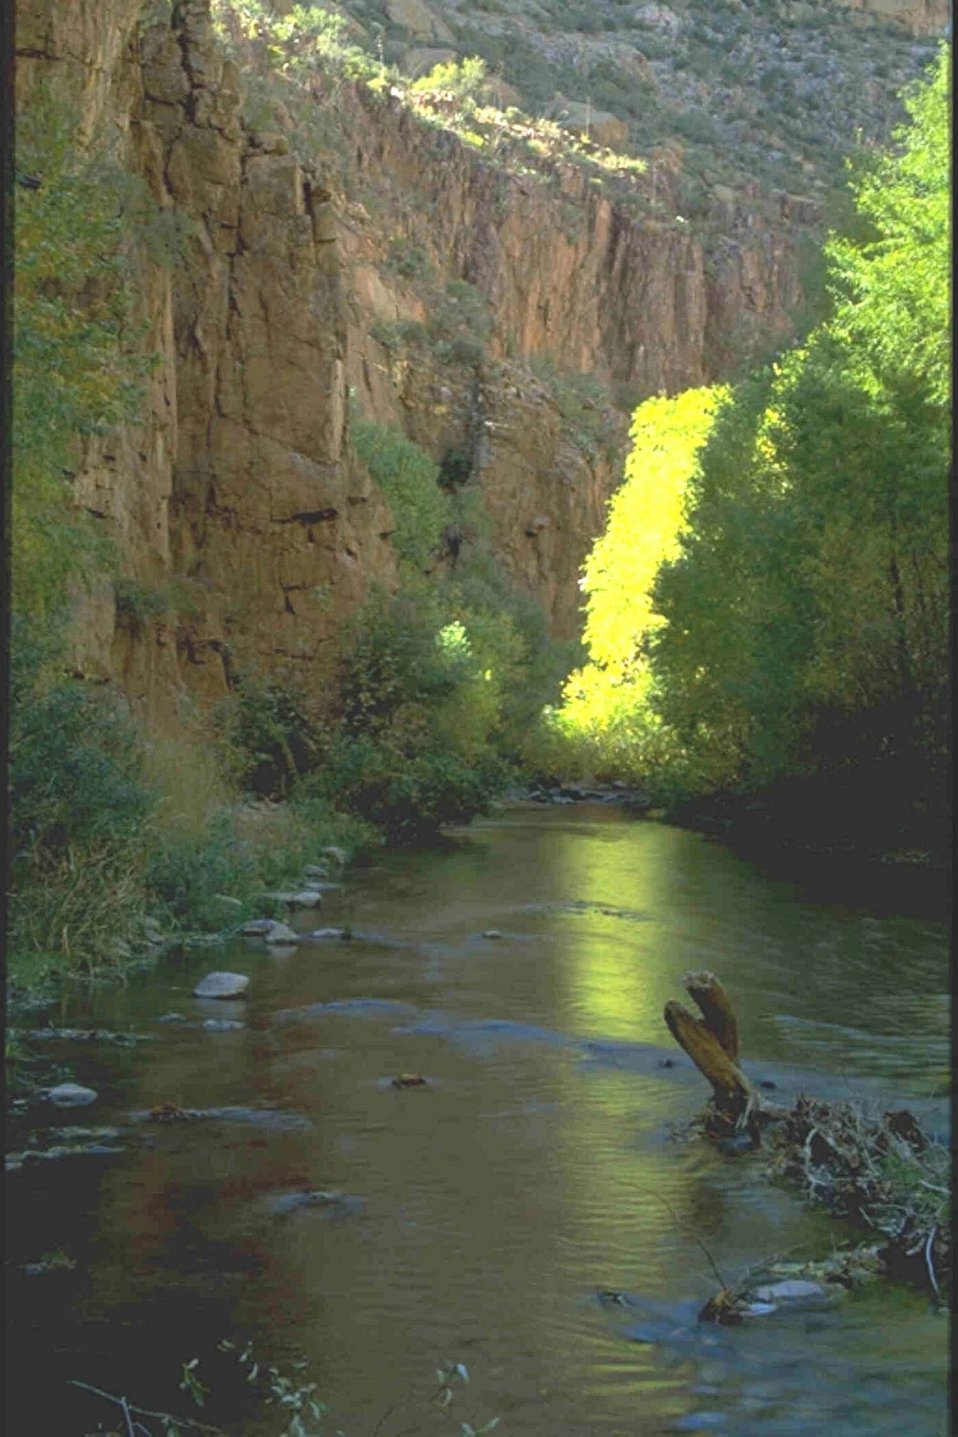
An emerald shaft of light reflects upon Aravaipa Creek.